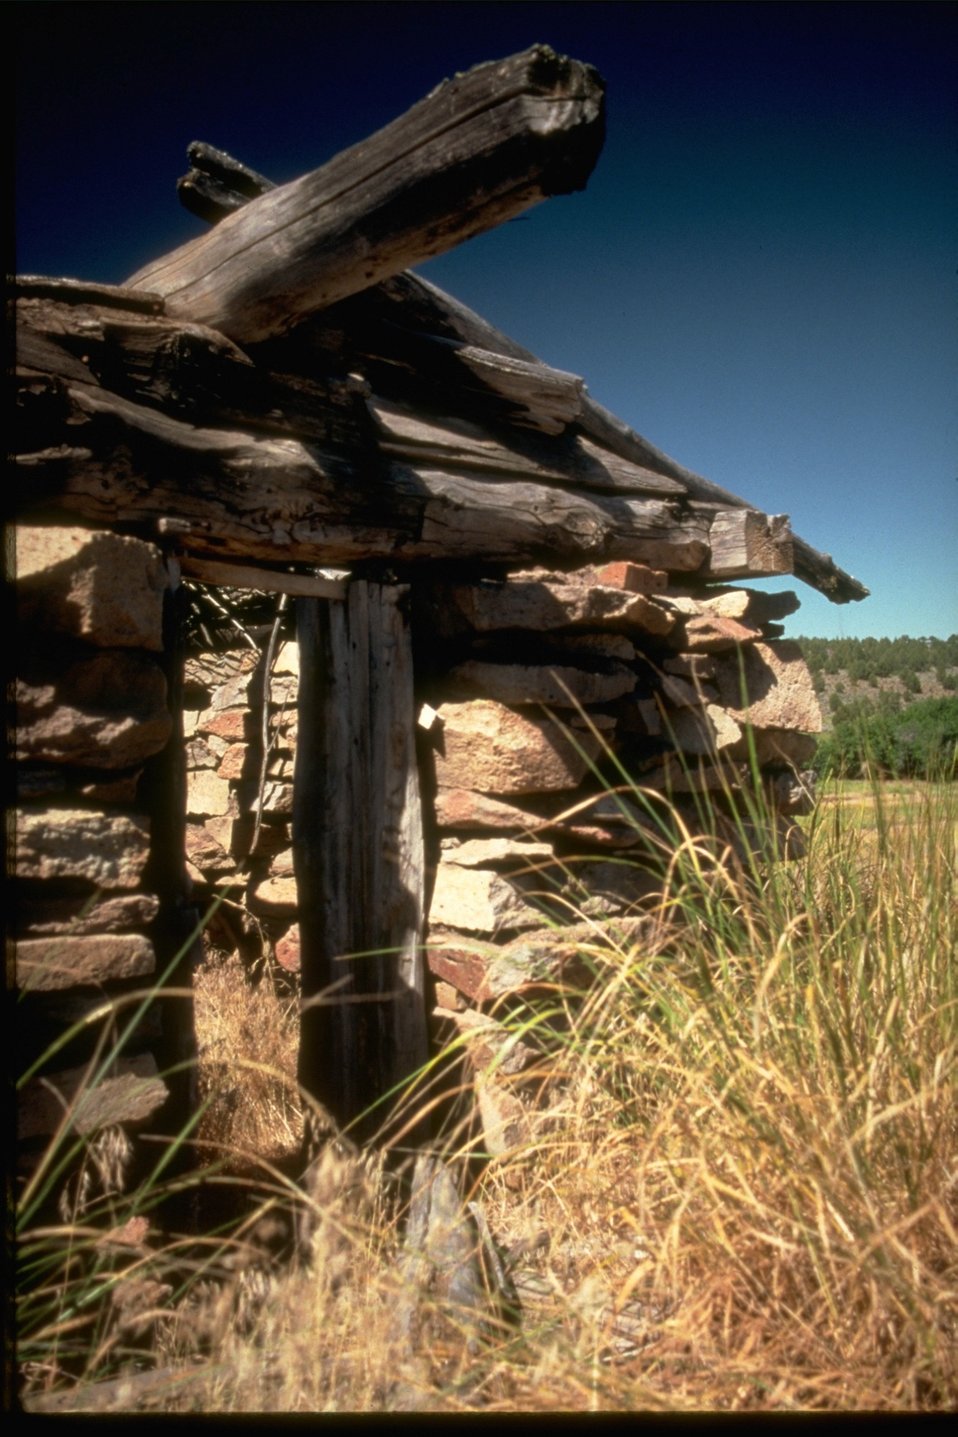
Old log cabin falling down with tall grass in the foreground.